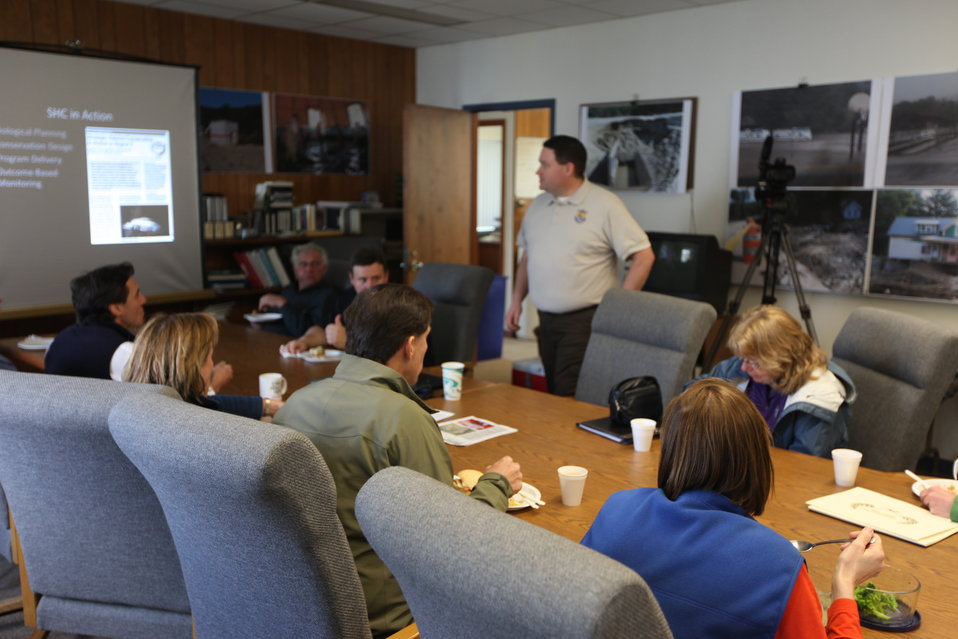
Lamprey Presentation

Brad Young from the U.S. Fish and Wildlife Service, Lake Champlain Office, gives Director Dan Ashe and others a lunchtime presentation about the success of the Sea Lamprey control program and resulting health and success of the Lake Champlain fishery.